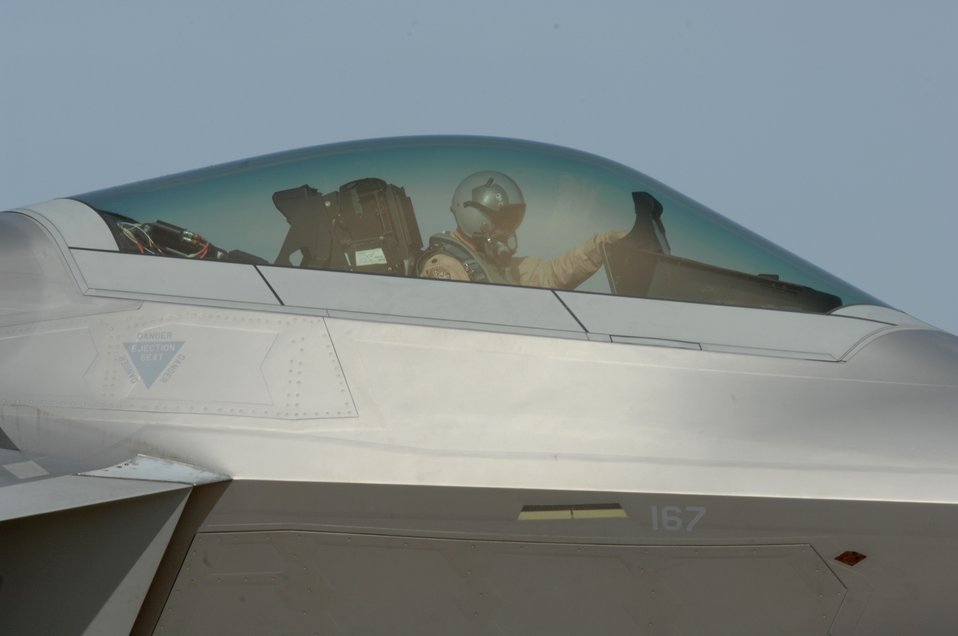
Operational readiness inspection

Lt. Col. Bryan Salmon prepares an F-22 Raptor for taxiing April 10, 2011, during an operational readiness inspection at Langley Air Force Base, Va. Colonel Salmon is the director of operations for the 149th Fighter Squadron.